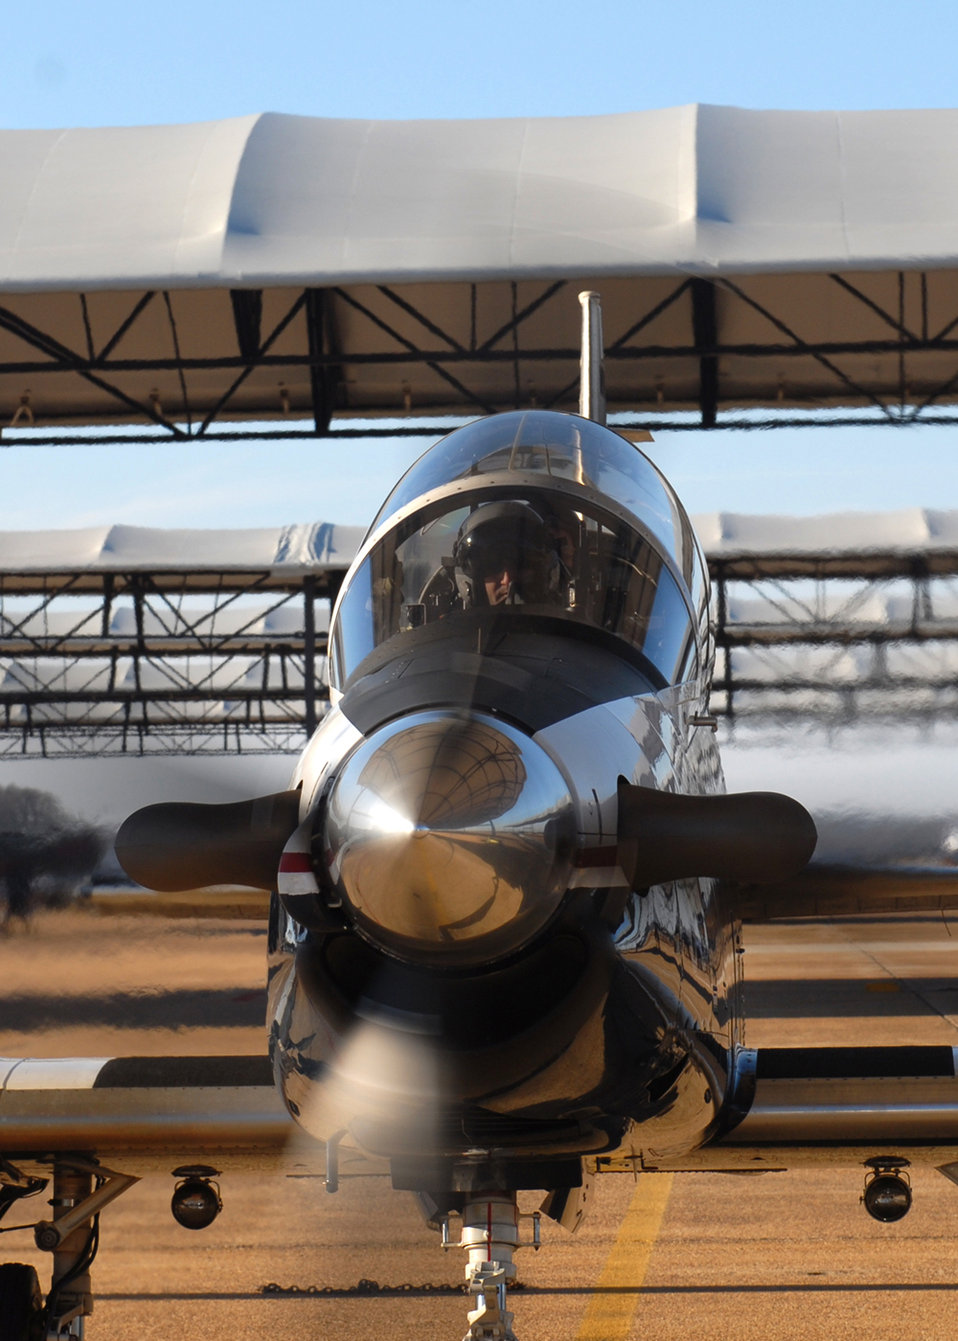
T-6 Texan II

The T-6A Texan II is a single-engine, two-seat primary trainer designed to train Joint Primary Pilot Training, or JPPT, students in basic flying skills common to U.S. Air Force and Navy pilots.